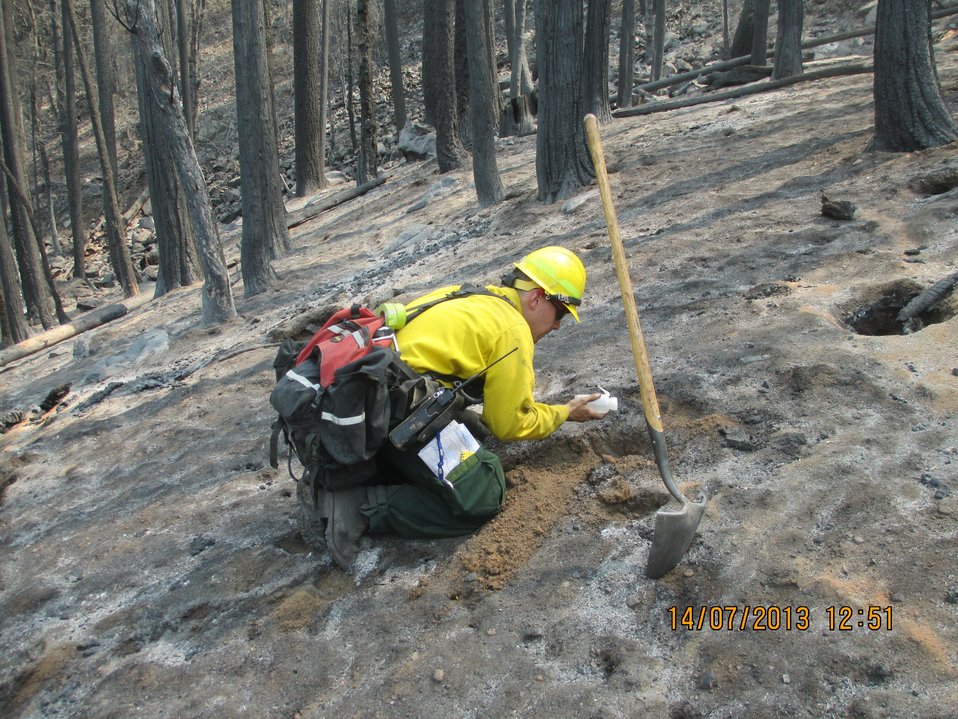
Burned Area Emergency Response (BAER) soil scientist assesses burned area of Rim Fire. BAER teams start work even before the fire is completely extinguished at the Rim Fire. BAER is a rapid assessment of burned watersheds by a BAER team to identify imminent post-wildfire threats to human life and safety property and critical natural or cultural resources on National Forest System lands and take immediate actions to implement emergency stabilization measures before the first major storms. Fires result in loss of vegetation exposure of soil to erosion and increased water runoff that may lead to flooding increased sediment debris flows and damage to critical natural and cultural resources. BAER team members implement seeding and mulching installation to prevent erosion, erect temporary water run-off control structures that will protect recovering areas, and installation of warning signs, replace safety related facilities, remove safety hazards, prevent permanent loss of habitat for threatened and endangered species, and prevent the spread of noxious weeds and protect critical cultural resources. The Rim Fire in the Stanislaus National Forest near in California began on Aug. 17, 2013 and is under investigation. The fire has consumed approximately 256,169 acres and is 84% contained.